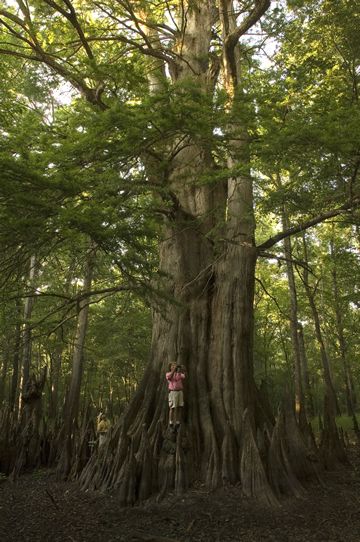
Champion Cypress Tree, White River Refuge

Champion Cypress Tree Trail, Arkansas.